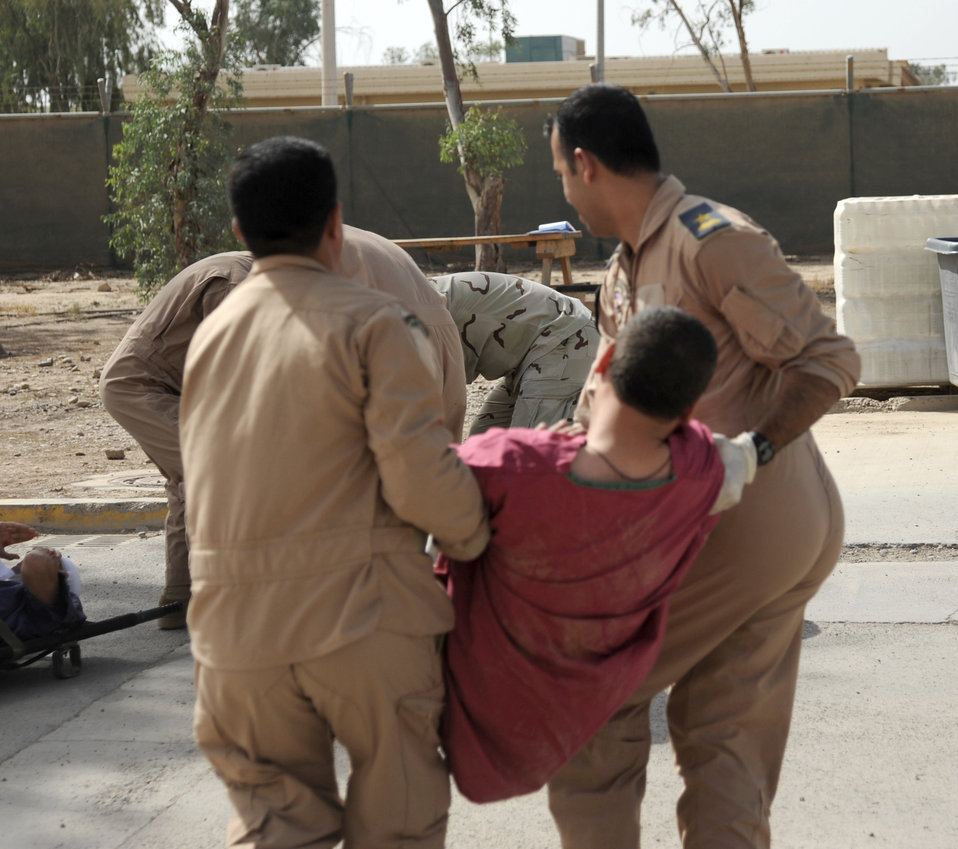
Iraqi forces practice lifesaving measures

Iraqi military members carry a victim with simulated injuries to a safe point to provide him with medical treatment during a training exercise May 20, 2010, at Joint Base Balad, Iraq. Iraqi forces from Al-Muthana, Camp Taji and New Al-Muthana participated in an exercise that demonstrated their abilities to assess and treat different conditions that may happen in a combat environment.